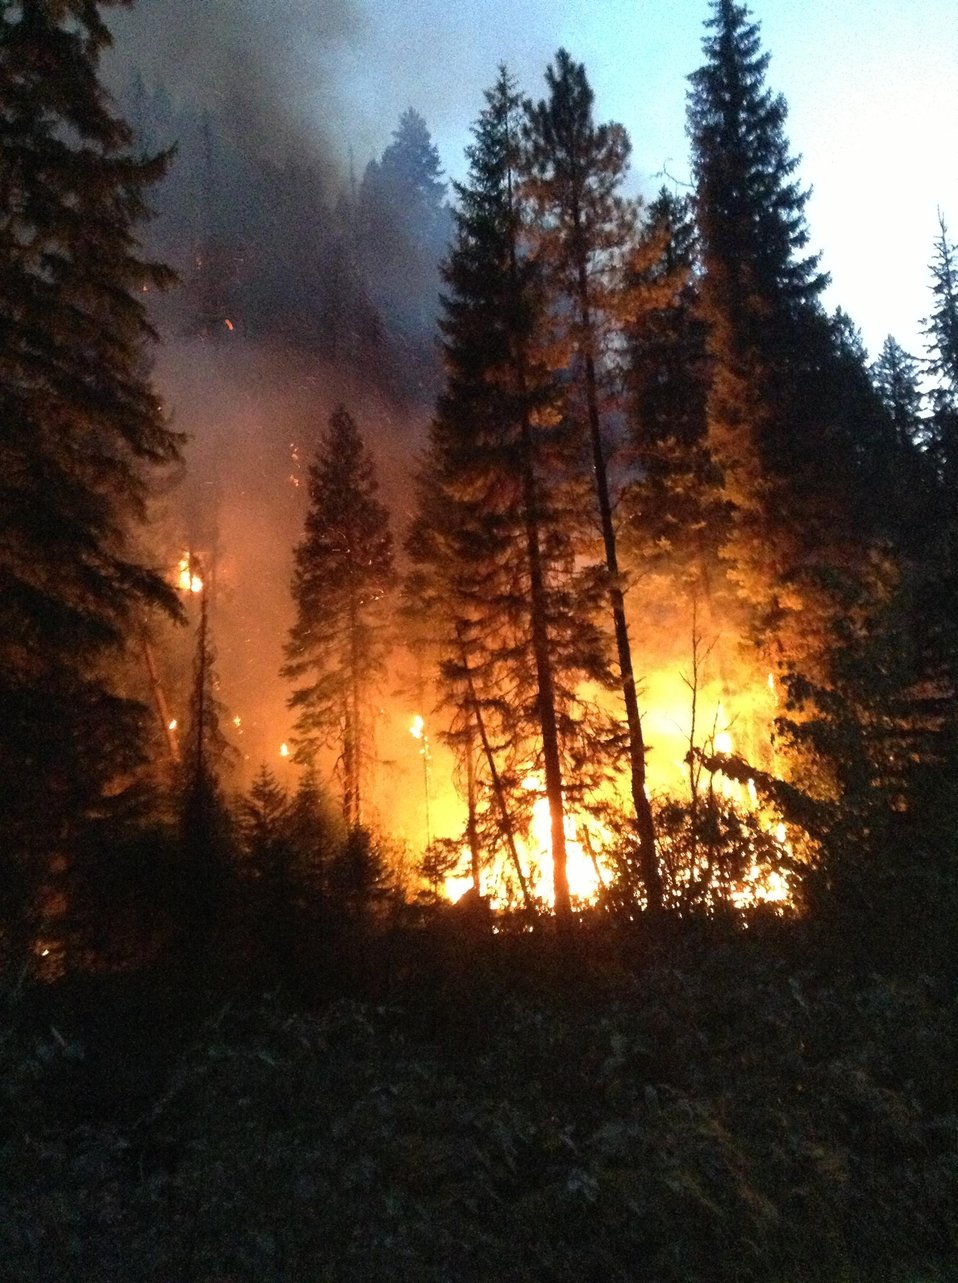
The Gold Pan Fire in the Bitterroot National Forest near Conner, MT began by lightning on Jul. 16, 2013 by lighting have consumed approximately 17,163 acres.